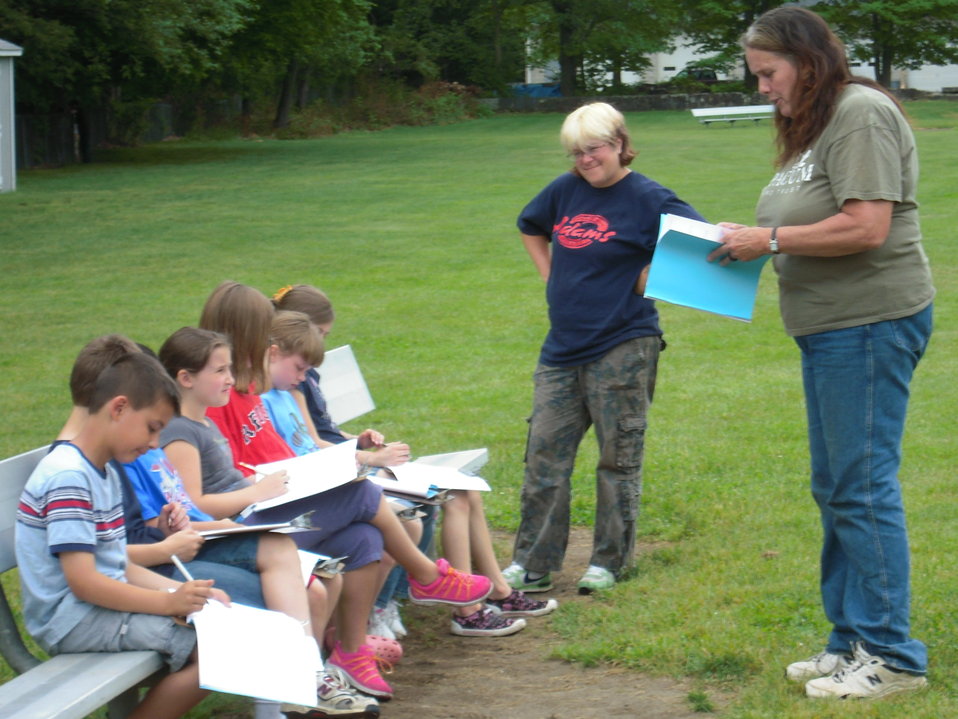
Duthie talking plants